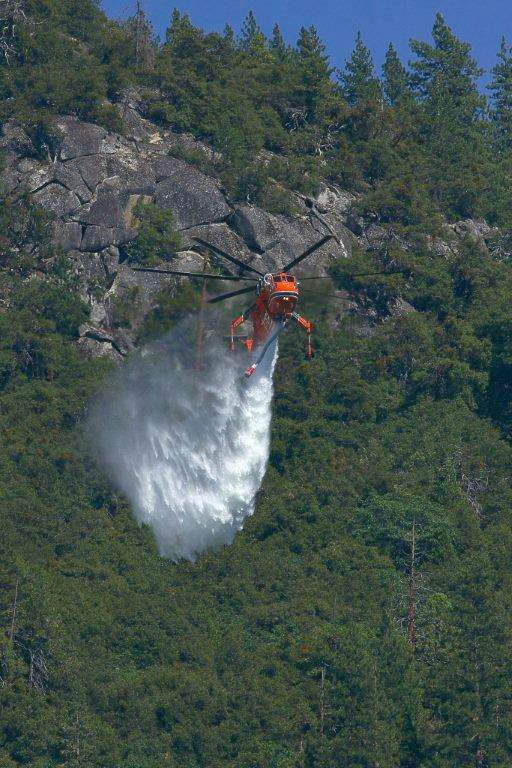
A skycrane drops 2,000 gallons of water in a strike against the Power Fire in California. The Power Fire in the Stanislaus National Forest near Beardsley Reservoir in California began on Aug. 5, 2013 is under investigation. The fire has consumed 881 acres and is 32% contained.